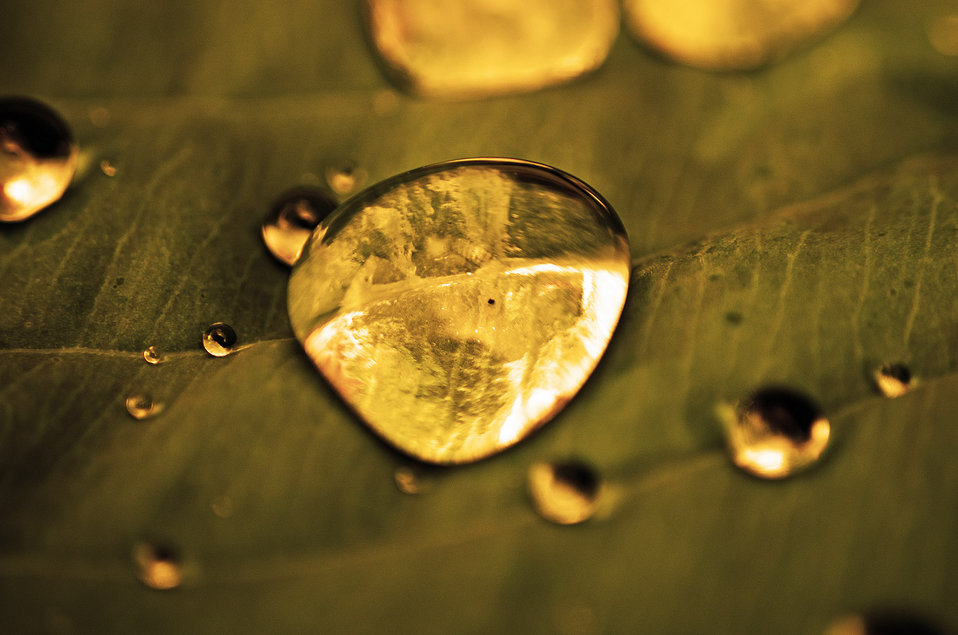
Raindrops - sepia.